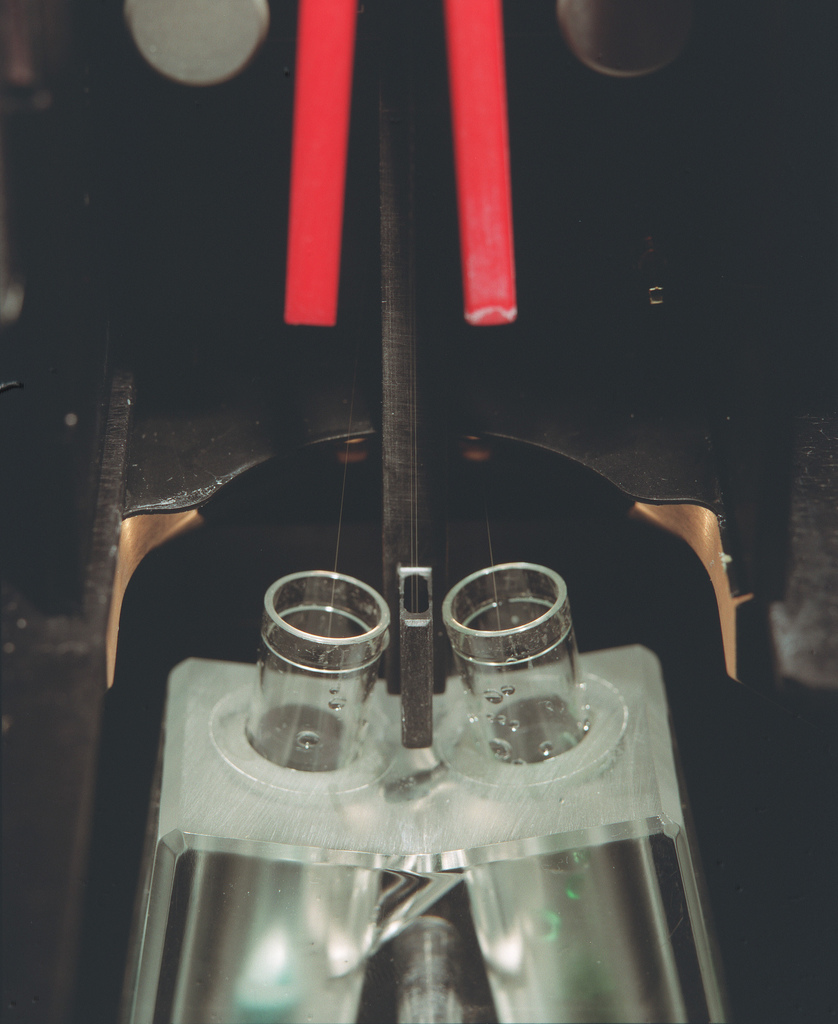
Pacific Northwest National Laboratory's new approach for generating synthetic antibodies uses high-speed flow cytometers, thus limiting the use of live animals.